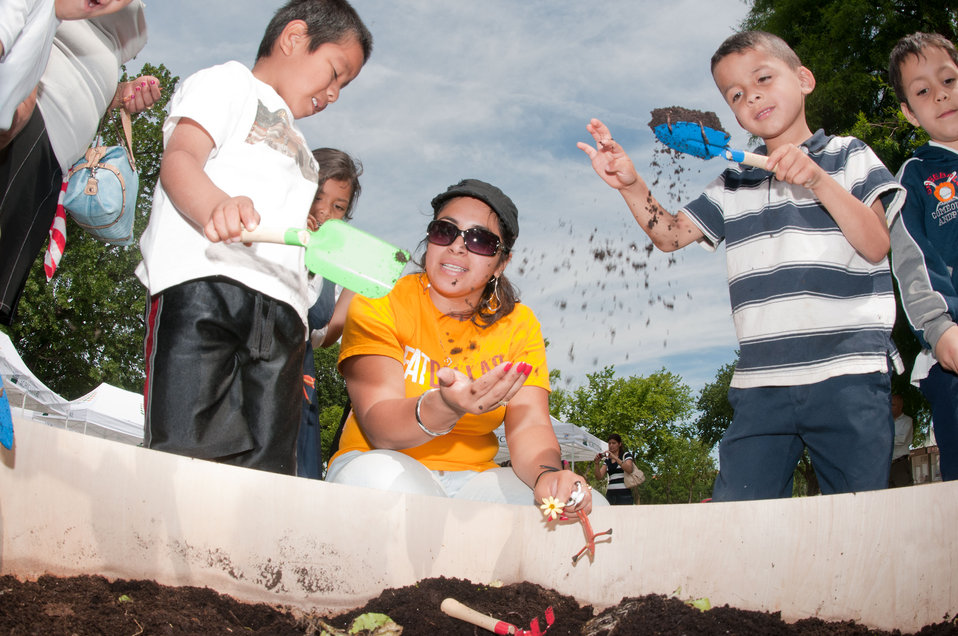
A student learns about the importance and cultivation of worms during the opening day of the USDA Farmers Market and the official kick off of the People's Garden activities on Friday, June 3, 2011 in Washington, DC. The adjacent USDA Farmers Market is located at the corner of 12th Street and Independence Avenue and will be open every Friday from 10:00 a.m. - 2:00 p.m. through November 18th. Special events will be happening every Friday at the market and at the People's Garden all season.